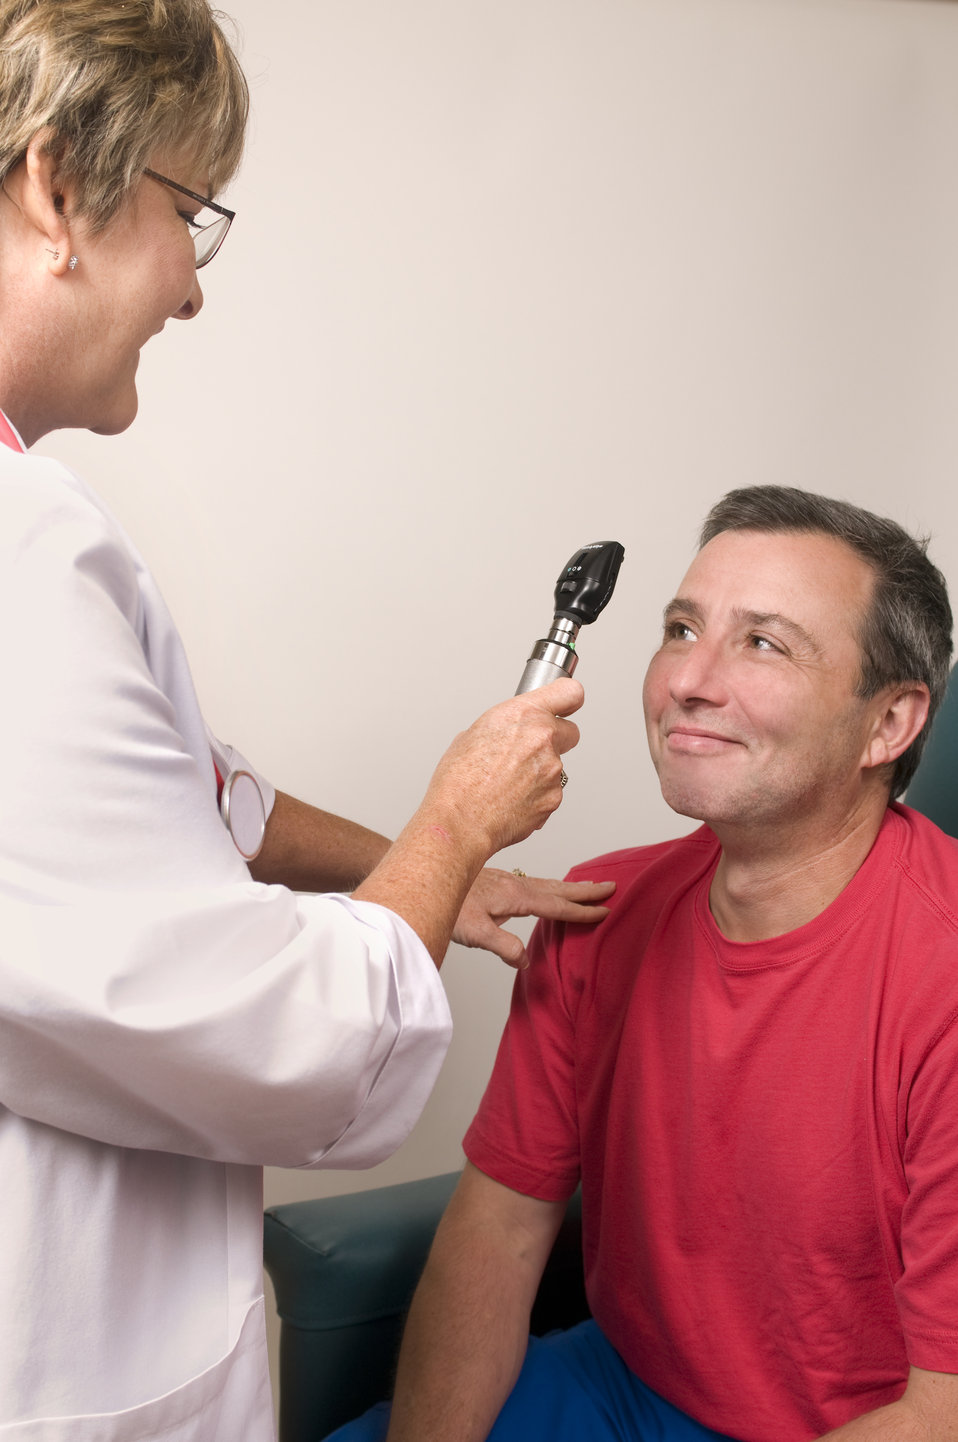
This seated male patient was in the process of receiving an eye examination from a female clinician, who was using a hand-held ophthalmoscope to see into his right eye.